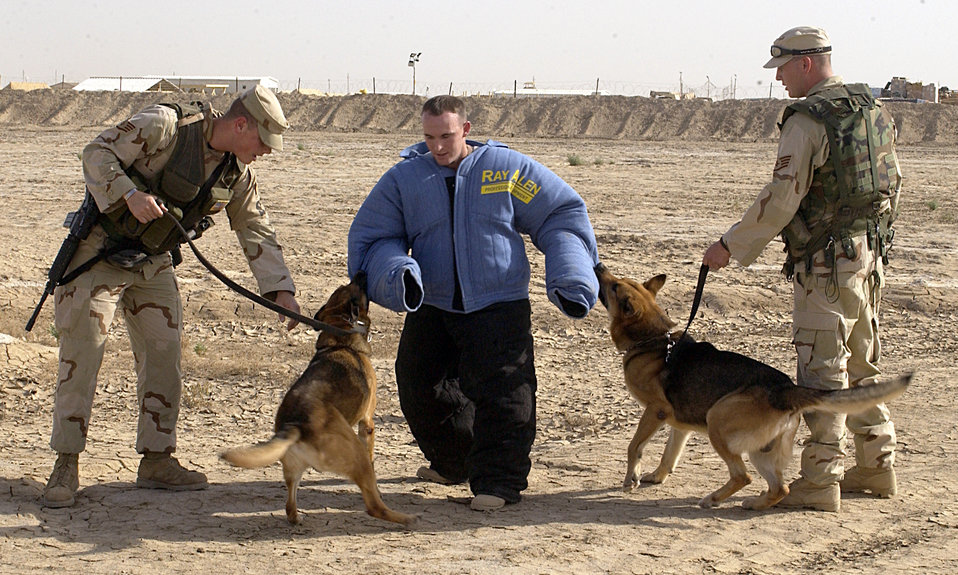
Two dog knights

OPERATION IRAQI FREEDOM -- Military working dogs, Harkos, left, and Bree, right, attack Senior Airman Steven Moolish during a six phases of aggression exercise here May 19, while their handlers, Staff Sgts. Gregory Manalo, left, and Derreck Bachner, right, control the dogs with commands. Sergeant Manalo and Bachner and Airman Moolish are all military working dog handlers with the 407th Expeditionary Security Forces Squadron.